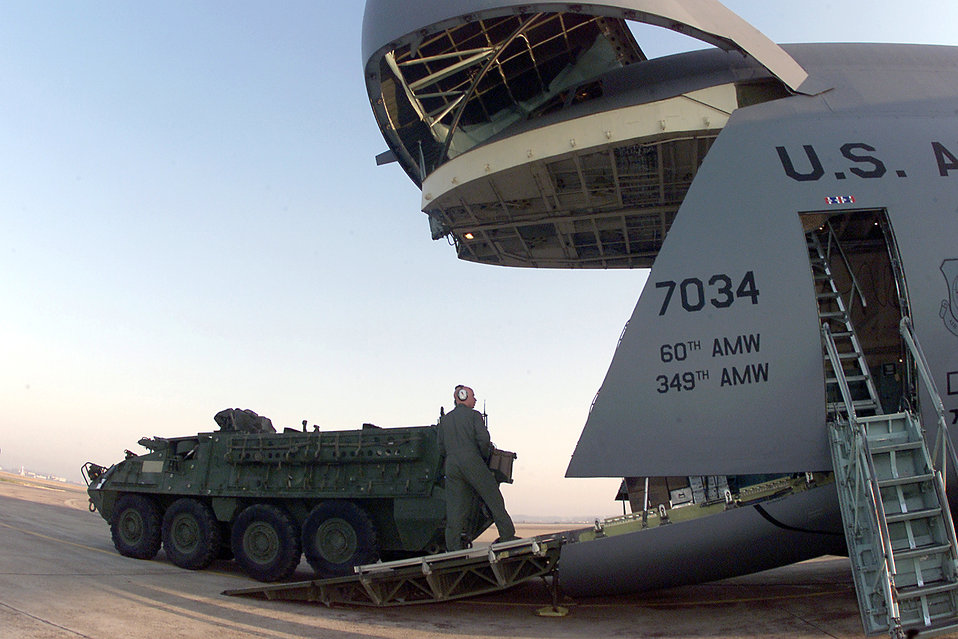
Stryker transport

OSAN AIR BASE, South Korea -- A Stryker M-1126 infantry carrier is loaded onto a C-5 Galaxy on April 8 for transport back to Fort Lewis, Wash. The Stryker was used during a Foal Eagle exercise in South Korea. The C-5 is from Travis Air Force Base, Calif.